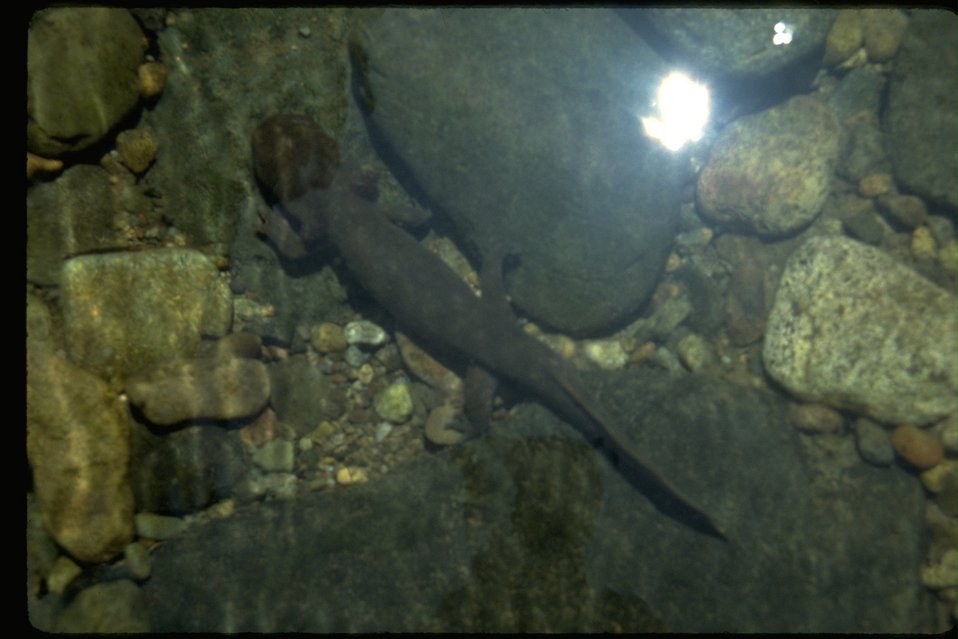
Giant salamander on rocks.